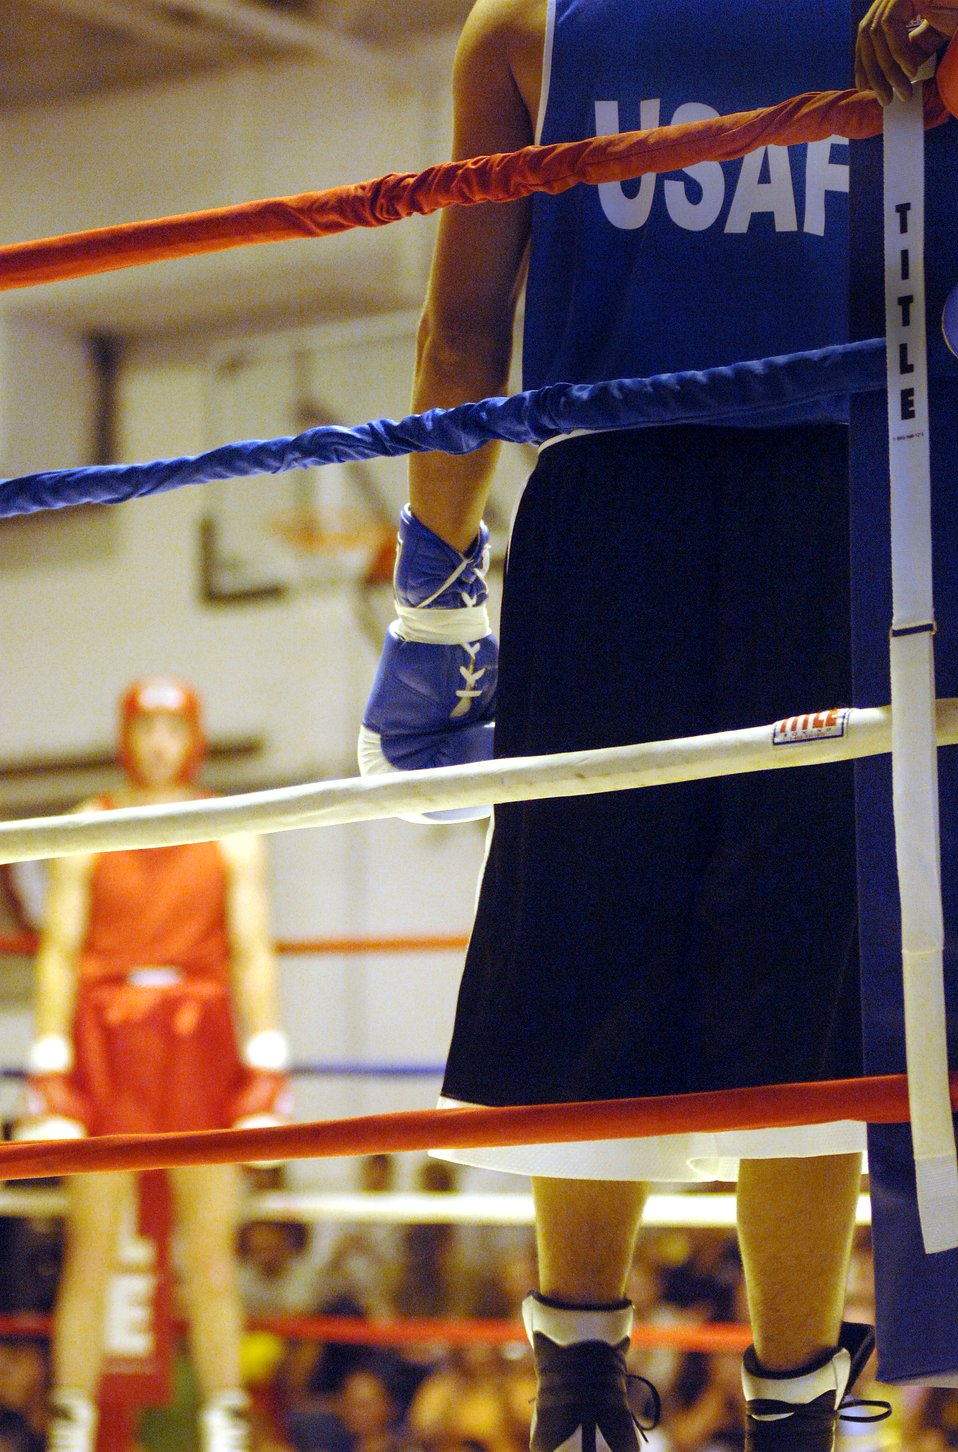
Boxing Royale

George de la Garza waits for the bell to start his match against Royal Air Force Senior Aircraftsman Rory Coatsworth at the Boxing Royale at the Bennett Fitness Center in San Antonio on Saturday, June 10. The event featured RAF boxers competing against U.S. military and local boxers. De la Garza won by decision.